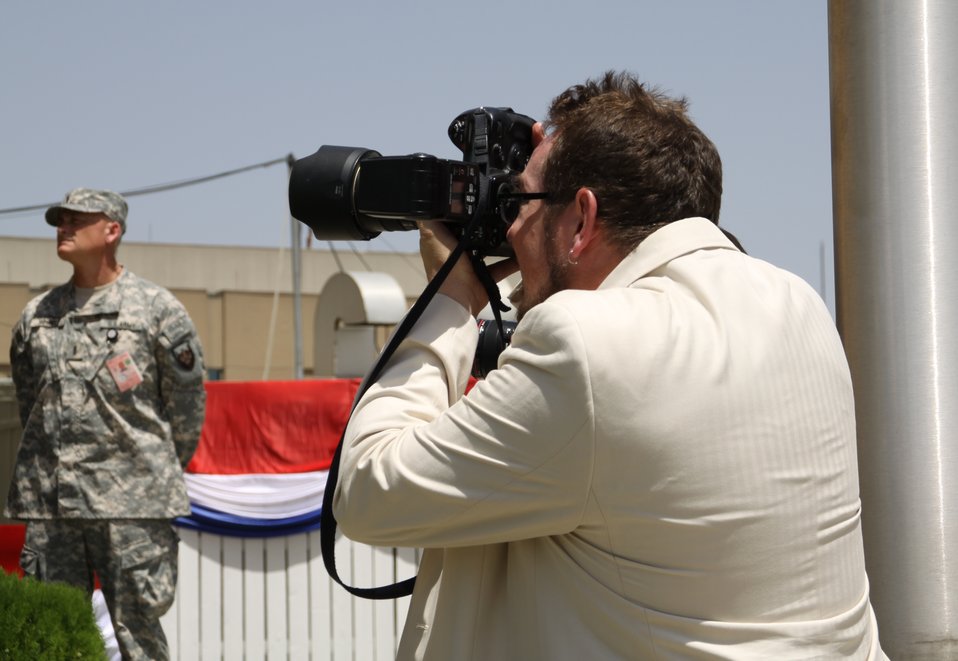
Kabul Official July 4th Celebration